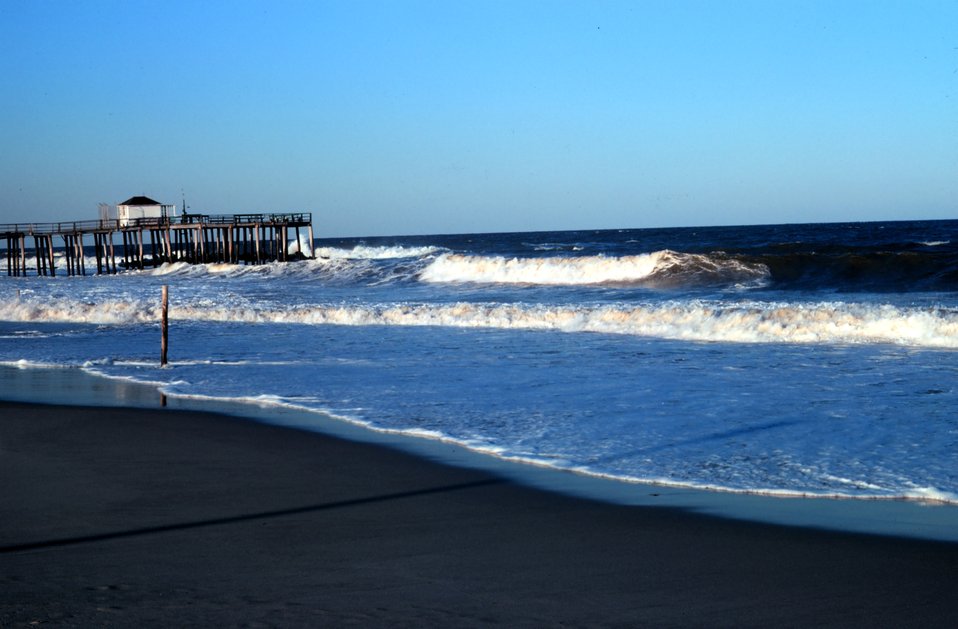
Fishing pier in North Carolina. Possibly this pier has since been rebuilt.